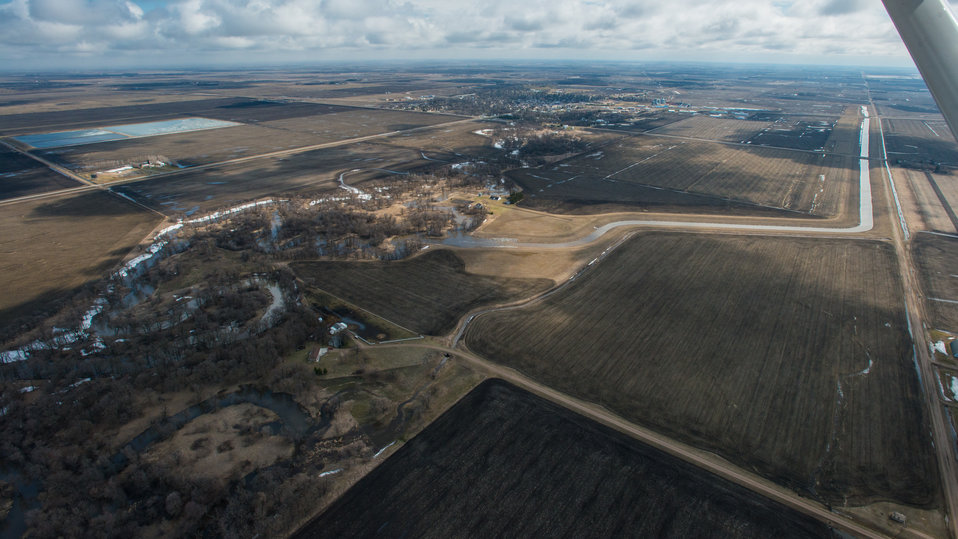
Snake River Diversion, a Public Law PL83-566 Small Watershed Program, at Warren, MN, on Wednesday, May 1, 2013. For information about this and other programs from the USDA Red River Basin Initiative (RRBI) please see www.mn.nrcs.usda.gov/news/features13/RRBI.html.